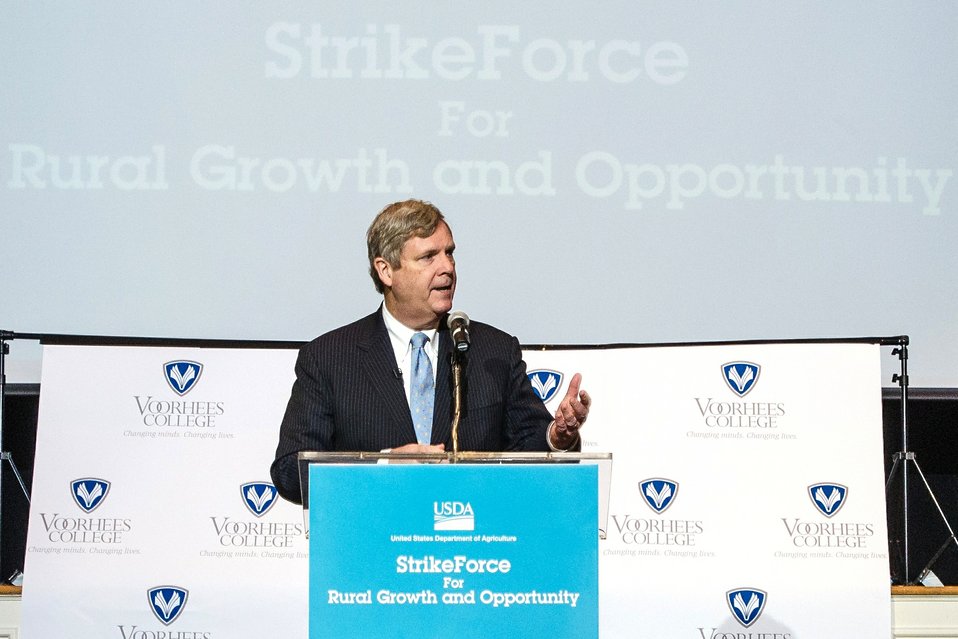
Agriculture Secretary Tom Vilsack speaks at the U.S. Department of Agriculture's (USDA) Strike Force for Rural Growth and Opportunity event held at Voorhees College in Denmark, SC, on Tuesday, March 26, 2013. The primary goal of the Strike Force initiative is to increase partnership with rural communities and leverage community resources in targeted, persistent poverty areas. Vilsack noted that through the Strike Force initiative, USDA will do more to partner with local and state governments and community organizations on projects that promote economic development and job creation.